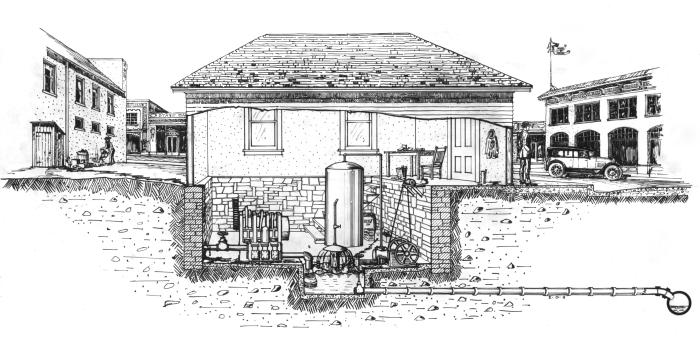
This historic 1922 drawing depicted an improperly constructed 'drilled' well for municipal use. An obvious hazard was the location of the privy to the left of the station, which was shown draining downhill toward the pump house. It also revealed a dangerous arrangement of the air-lift type of pumping eqipment, which had been located in a pit that drained overflow to a sewer. However, with this configuration, there was the potential for contamination should the sewer ever back up, due to flooding.